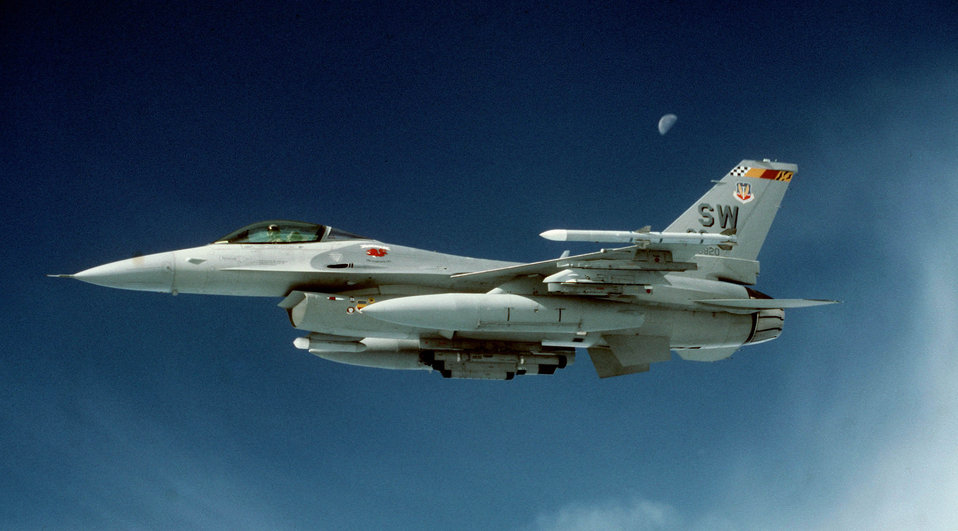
Falcon moon

FILE PHOTO -- An F-16C Fighting Falcon, with moon in the background, flies a local training mission. This F-16 is the flagship aircraft of the 20th Fighter Wing, Shaw AFB, S.C.